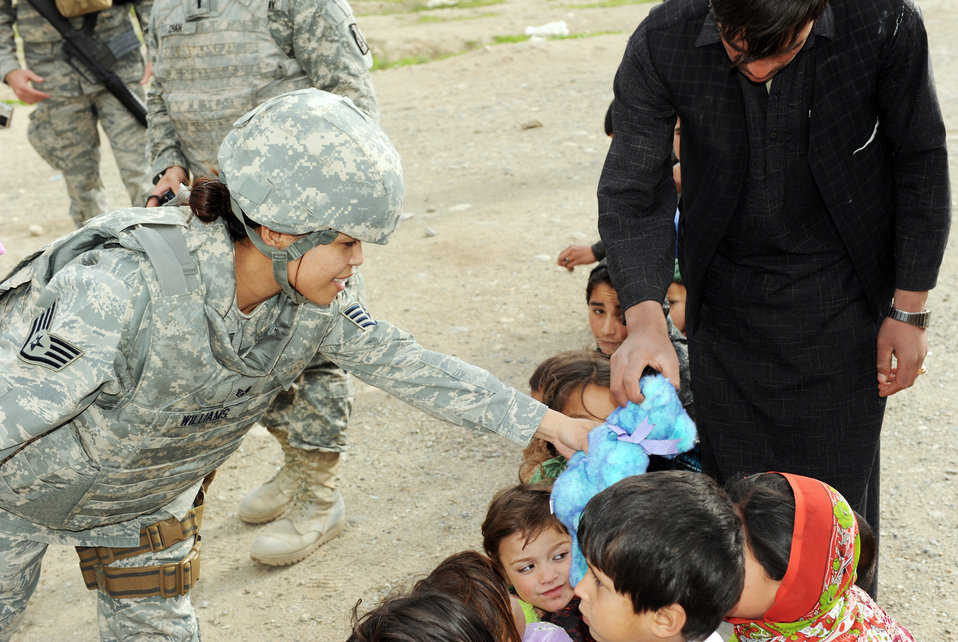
Operation Care

Staff Sgt. Charissa Williams hands out stuffed animals to local children during an Operation Care humanitarian aid mission April 5, 2010, outside of Bagram Airfield, Afghanistan. Sergeant Williams is from the 755th Air Expeditionary Group.